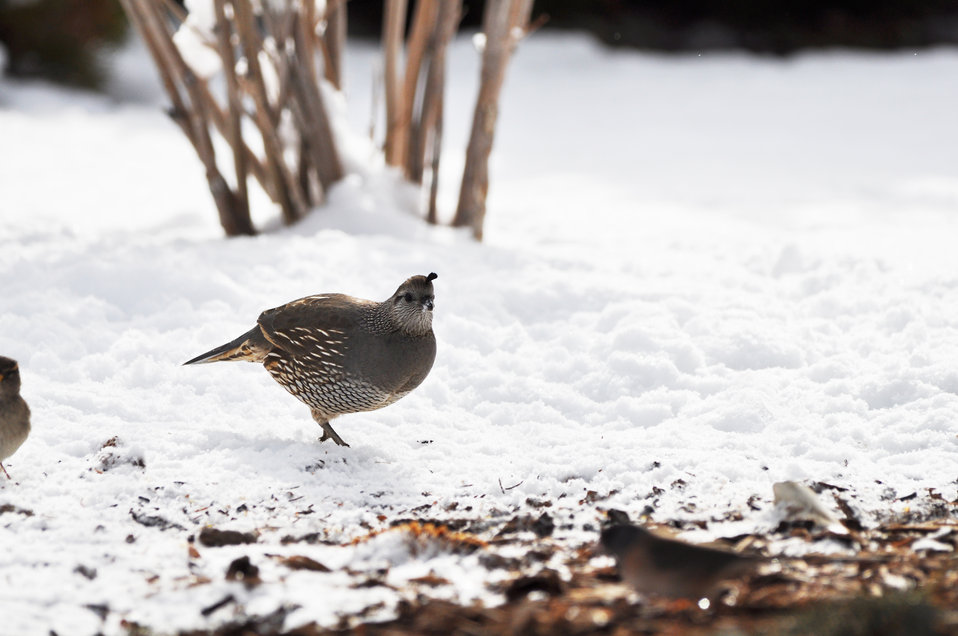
California quail photos taken in Gardnerville, NV